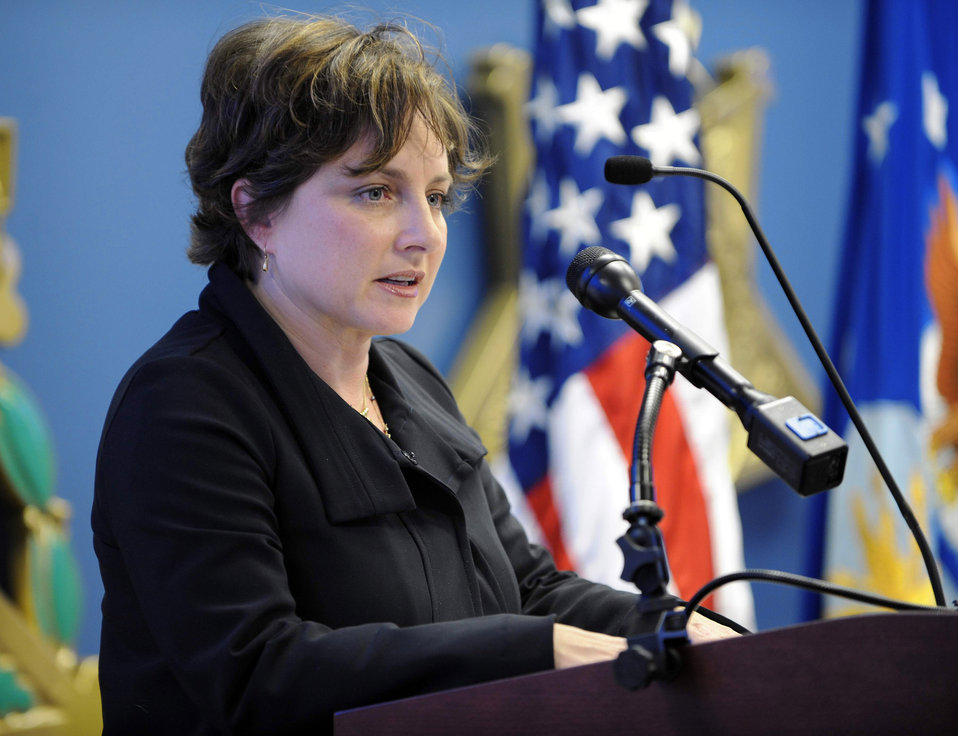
Secretary Donley announces location of newest Fisher House

Nancy Berglass addresses the audience at a ceremony to present her the Zachary and Elizabeth Fisher Distinguished Civilian Humanitarian Award at the Pentagon's Hall of Heroes Jan. 28, 2010, in Washington, D.C. The multidepartmental award was established in 1996 and is presented to those exemplifying personal qualities of patriotism, generosity, and selfless dedication to improving the quality of life of members of the armed forces of the United States. Ms. Berglass serves as lead consultant with the California Community Foundation's Iraq/Afghanistan Deployment Impact Fund. She is credited with distributing more than $245 million to 46 non-profit organizations that provide support services and programs to military members returning from Iraq and Afghanistan and their families. Her efforts through IADIF included providing $2.2 million to assist in creating the Intrepid Center, rehabilitation and training facility at Brooke Army Medical Center in San Antonio for amputee and burn patients.